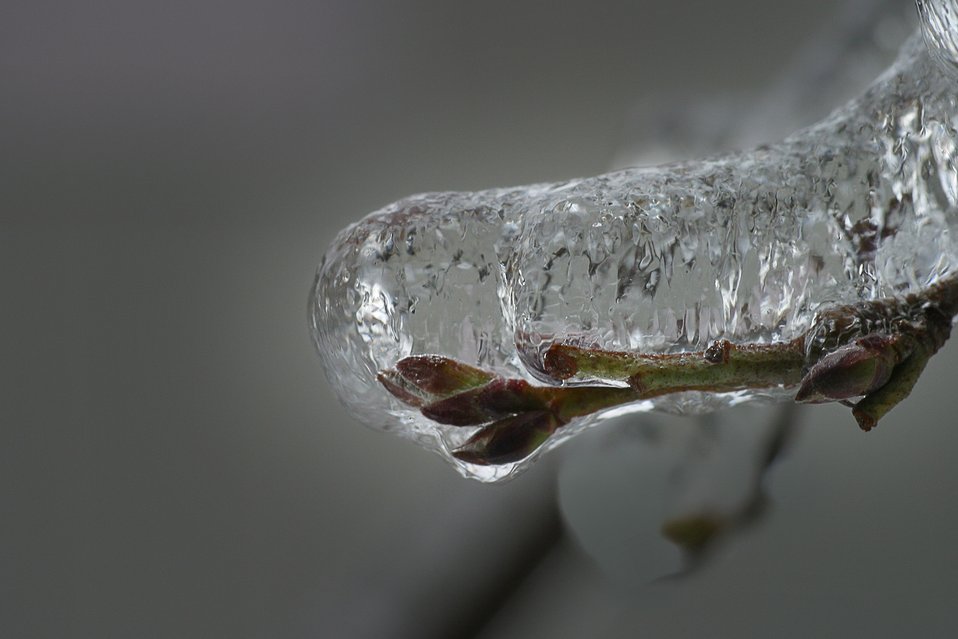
Ice on Service Berry branch.